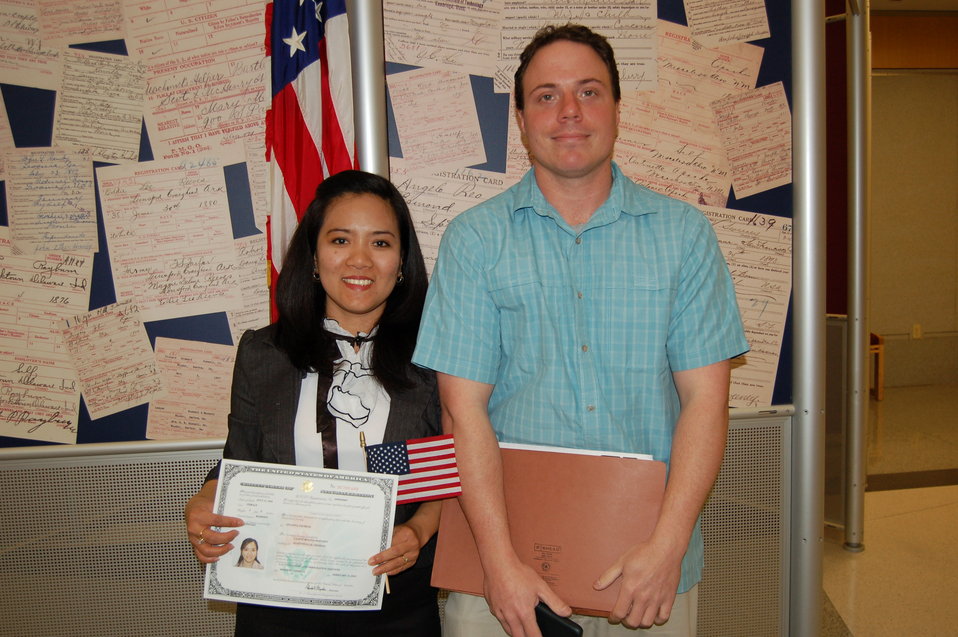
New Citizens